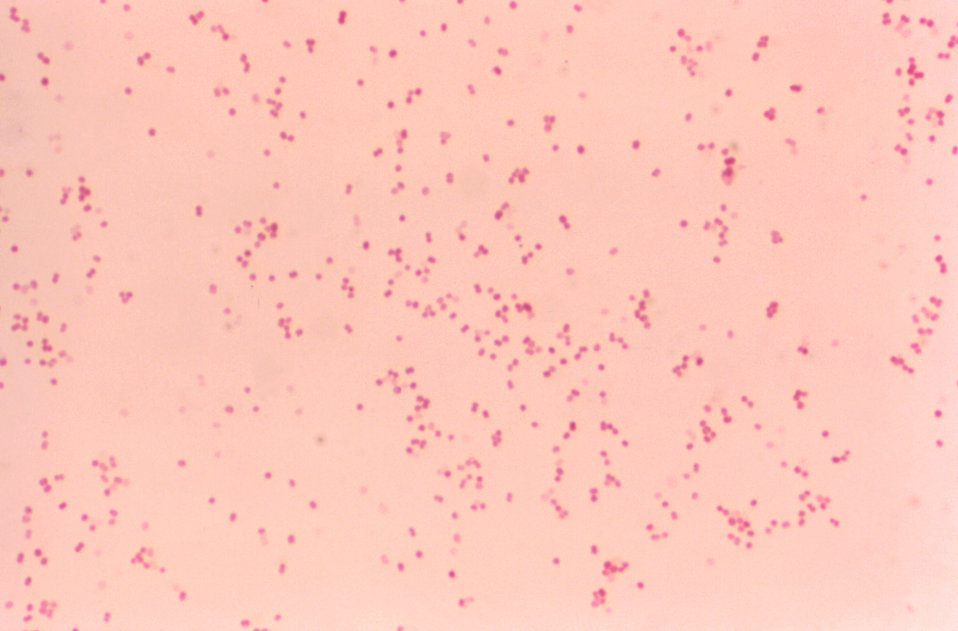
This Gram-stained photomicrograph revealed the presence of numerous Moraxella (Branhamella) catarrhalis, bacteria. Formerly known as Neisseria catarrhalis, or Micrococcus catarrhalis, this bacterium is a Gram-negative, aerobic diplococcus often found inhabiting the human upper respiratory tract as a commensal resident.